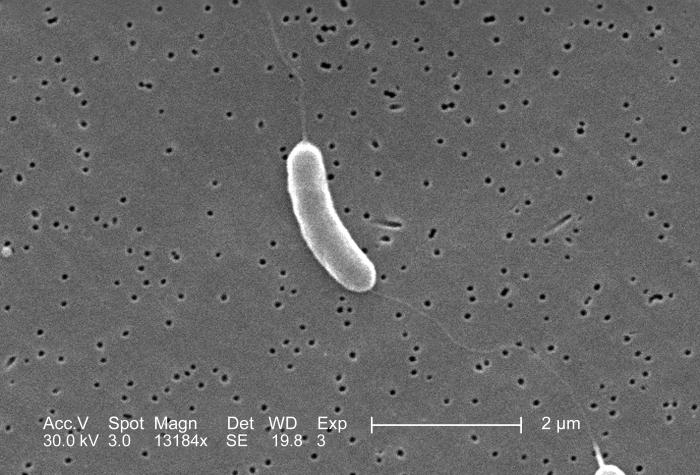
This scanning electron micrograph (SEM) depicts a flagellated Vibrio vulnificus bacterium; Mag. 13184x.